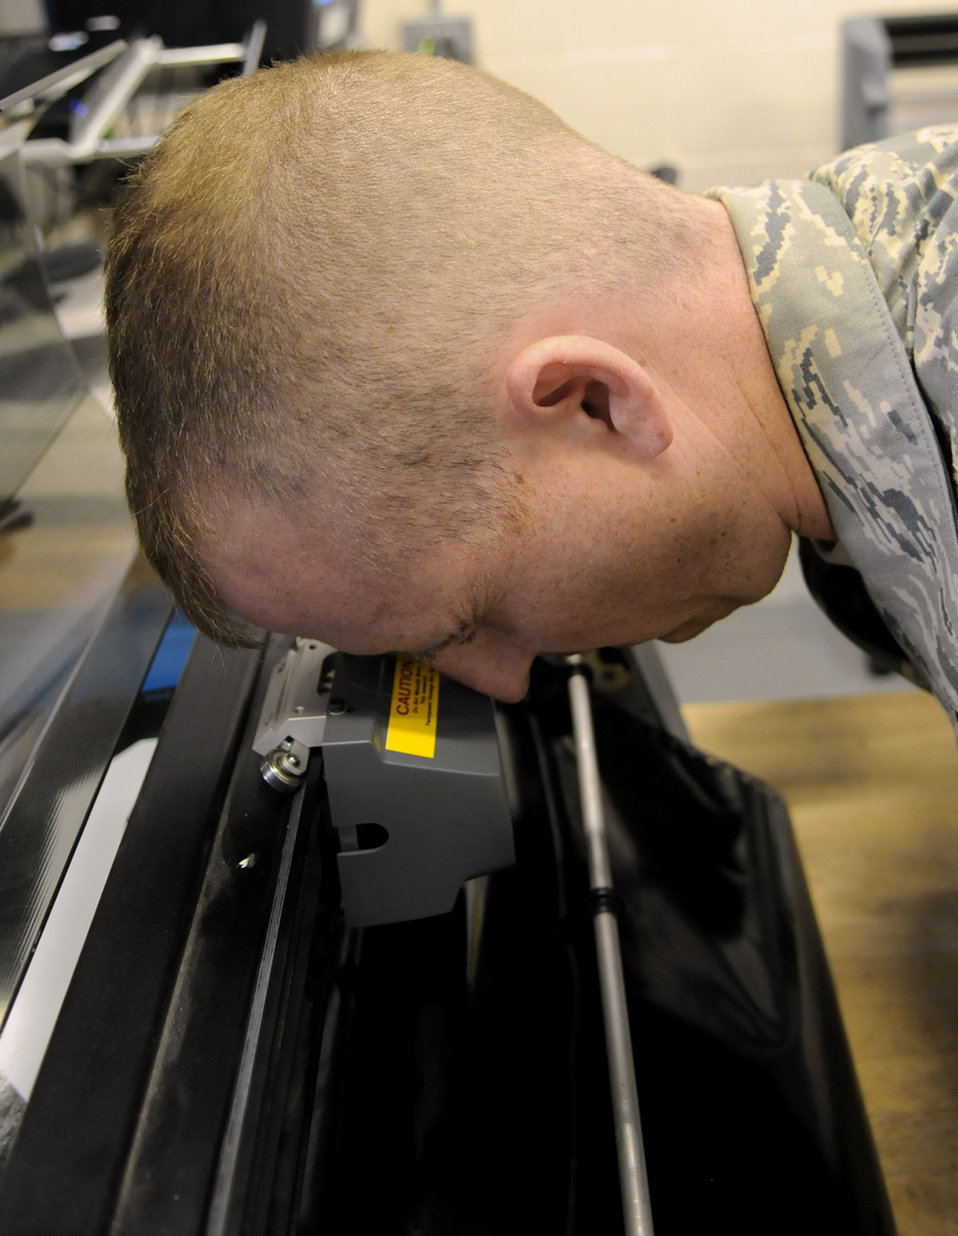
Stick 'em up: Corrosion control shop develops decals for rapid recognition

Staff Sgt. Christopher Breaux uses a